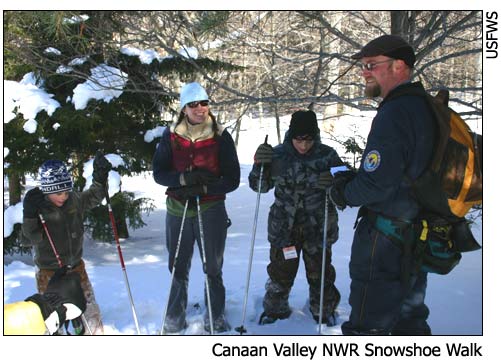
Interpretive snowshoe walk

At Canaan Valley National Wildlife Refuge, WV.